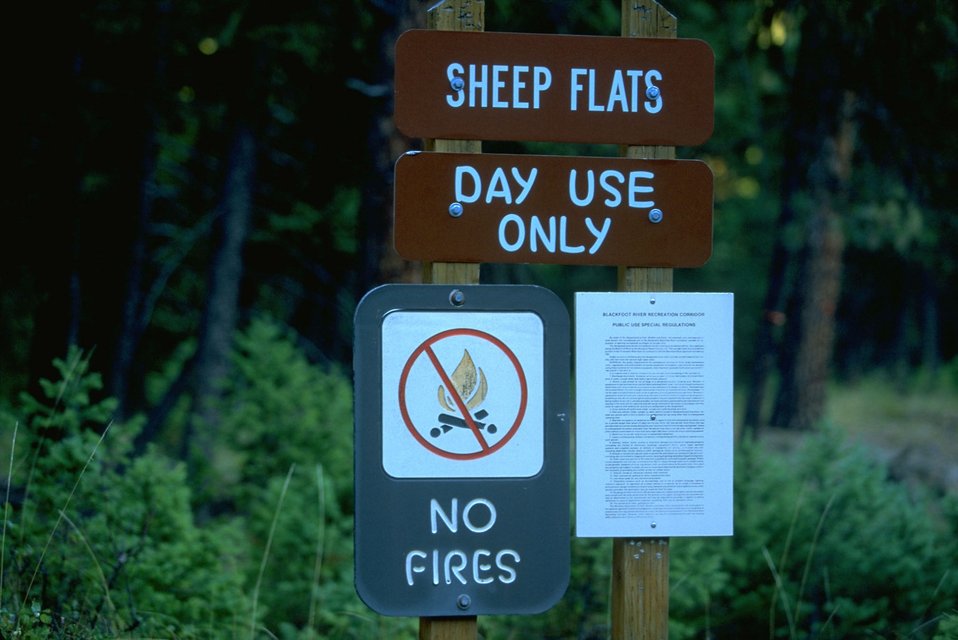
Entry sign at Sheep Flats day use area